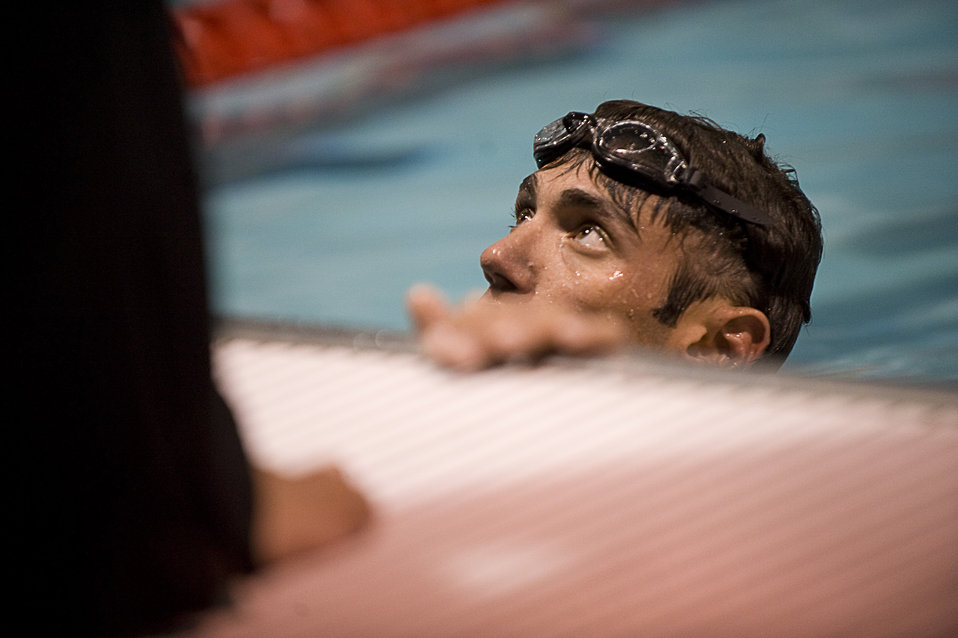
Warrior Games Airmen prepare for competition

Staff Sgt. Marc Esposito listens to advice from his coach during swim practice May 11, 2010, at the Olympic Training Center in Colorado Springs, Colo. These wounded, injured and ill athletes are competing against athletes from all services in the inaugural Warrior Games May 10 through May 14, 2010. Sergeant Esposito is assigned to Pope Air Force Base, N.C.